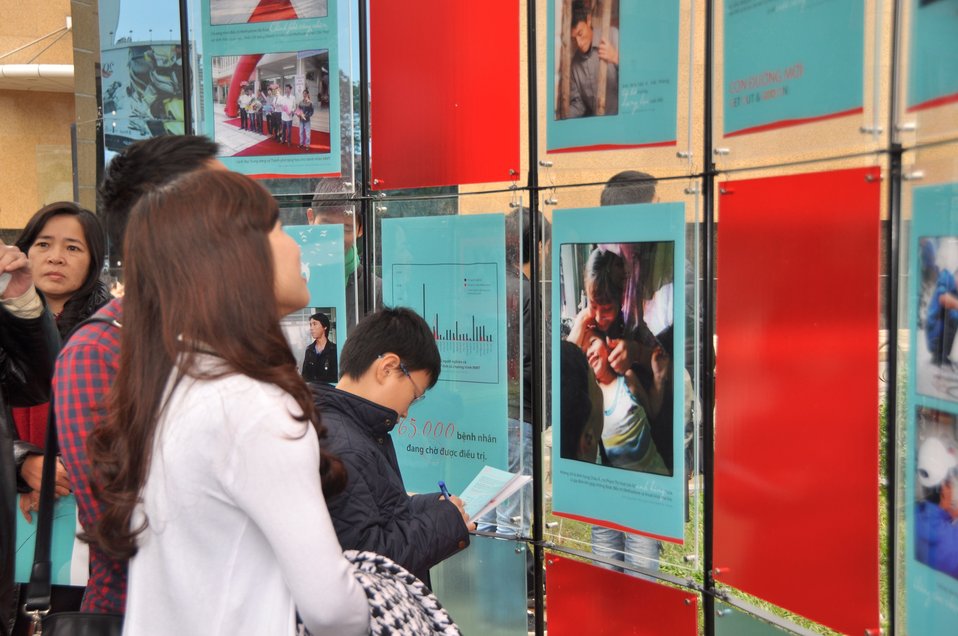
Photo Exhibition Launch

USAID/Vietnam